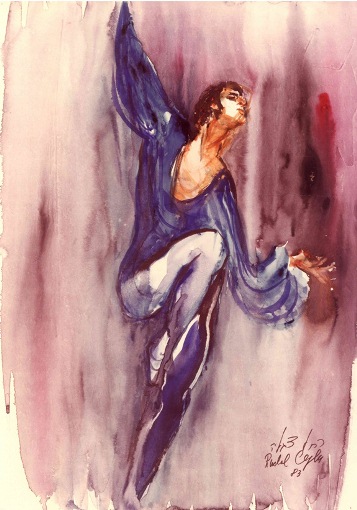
עברית: Rachelcegladance2